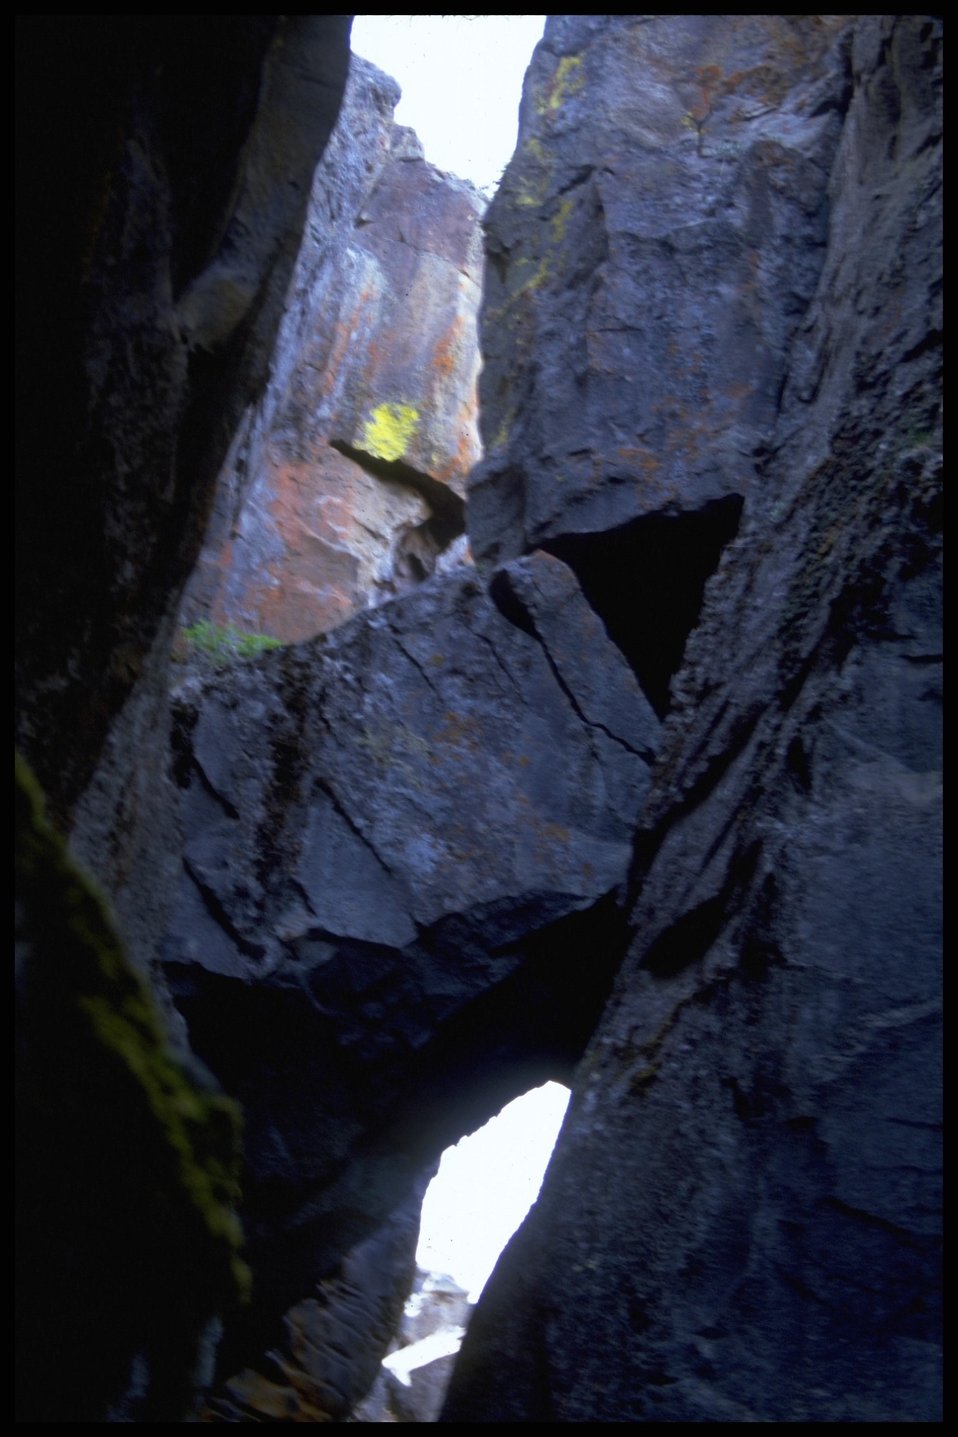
Scenic view of "Crack in the Ground", Lakeview District.